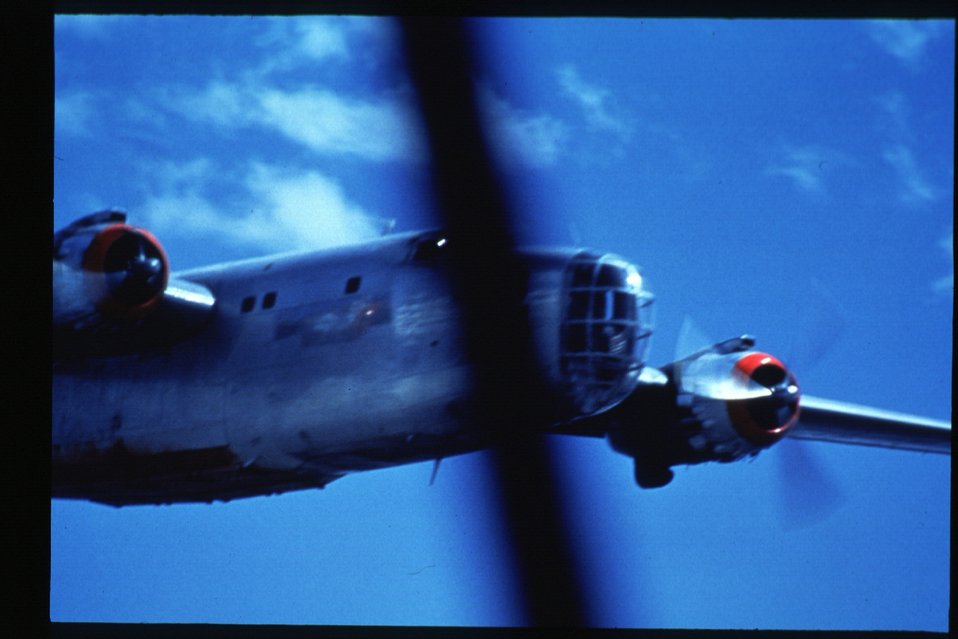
Boise Foothills Fire Danskin Mountains and South Fork of Boise River Retardent planes Four River Field Office LSRD Lower Snake River District